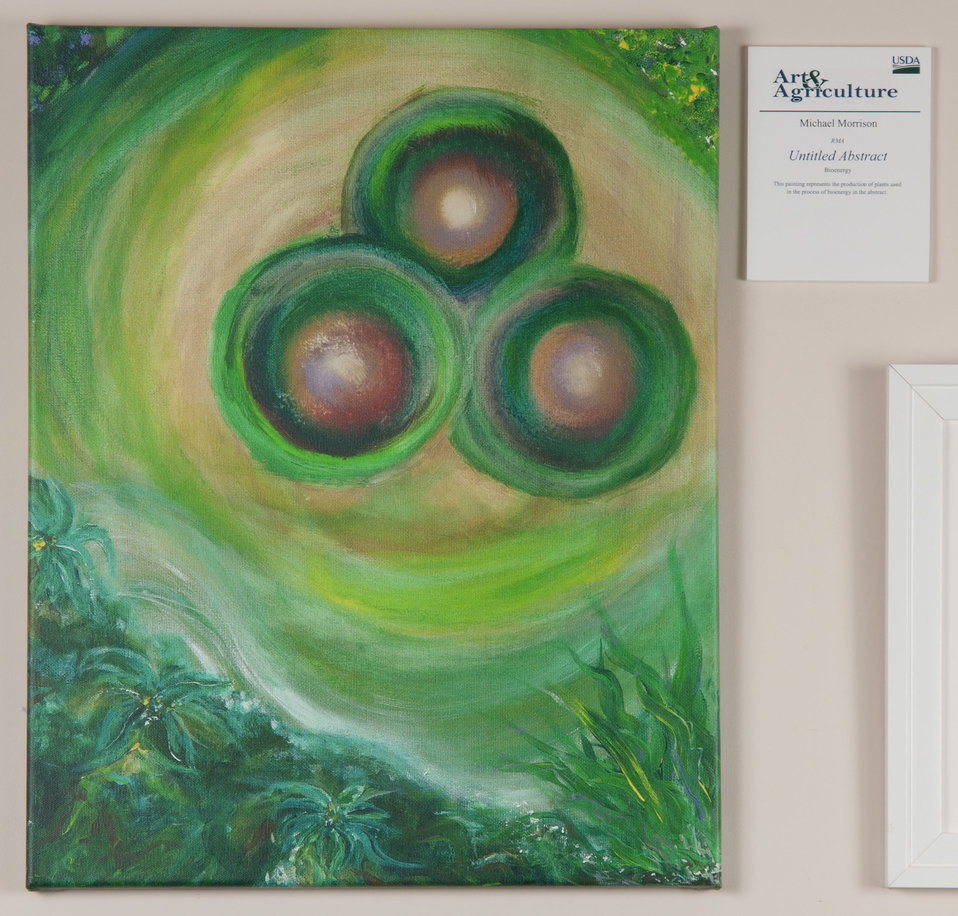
Online Viewer's Choice entries of the 2013 Art & Agriculture, Tuesday, July 9, 2013, in the South Building, Washington, D.C. Themes were expressed by employees from across the department and the contest was open to full-time and part-time USDA employees. Winning artwork will be displayed till the end of the year. U.S. Artistic expression is a creative outlet that is vital for an individual to grow and develop.